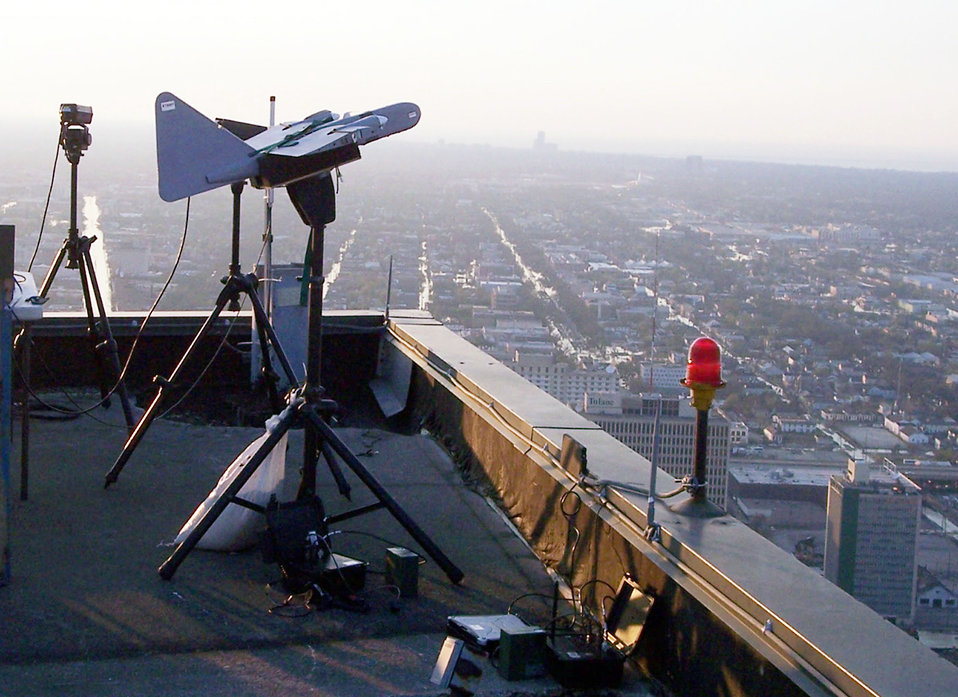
ROVERs aid in search and rescue

NEW ORLEANS -- An unmanned aerial vehicle, mounted on a pole, uses its remote operations video enhanced receiver, or ROVER, to help find survivors of Hurricane Katrina here and support relief efforts.